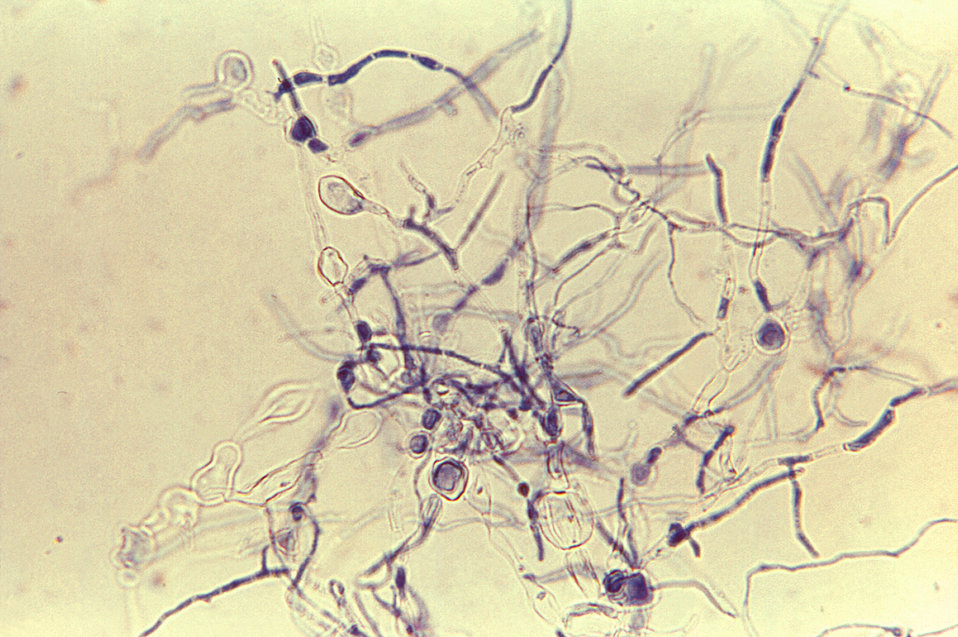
Magnified 475X, this photomicrograph depicts some of the structural morphology of numerous Trichophyton violaceum fungal organisms. This dermatophyte had been grown in a medium of Sabouraud dextrose agar, and of note are the organism's mycelia, or branching hyphae, i.e., the vegetative portion of the fungus, and ovoid-shaped, thick-walled chlamydospores.